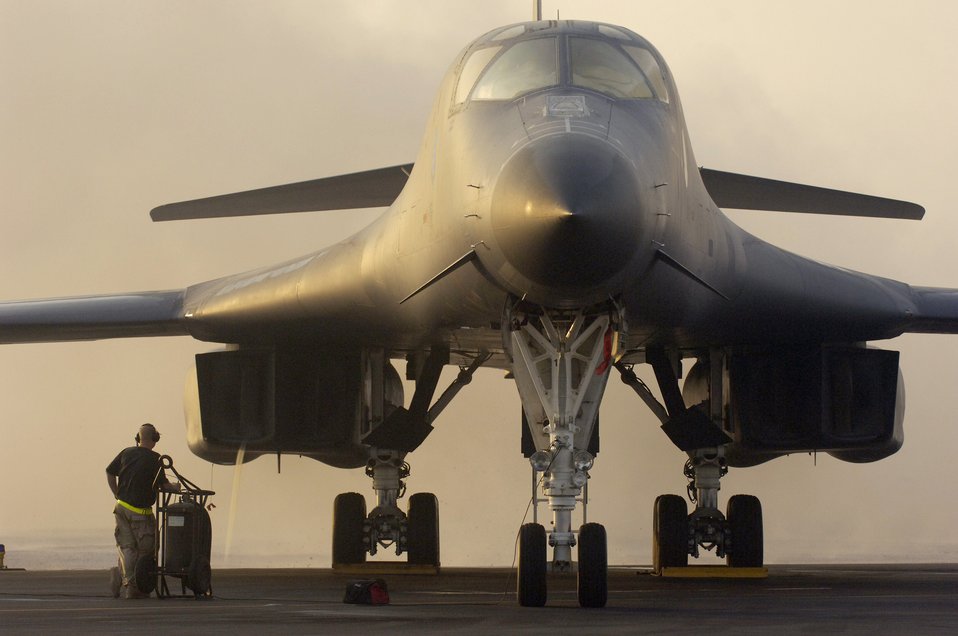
Lancer preparations

Senior Airman Phillip Larson runs through a preflight inspection next to a B-1 Lancer in Southwest Asia Sept. 28. The crew chief's tasks include observing the firing-up of four turbofan engines that expend a combined thrust of 120,000 pounds, enabling the long-range, multi-role bomber to fly at speeds exceeding 900 mph. Airman Larson is assigned to the 379th Aircraft Maintenance Squadron at a forward-operating base.